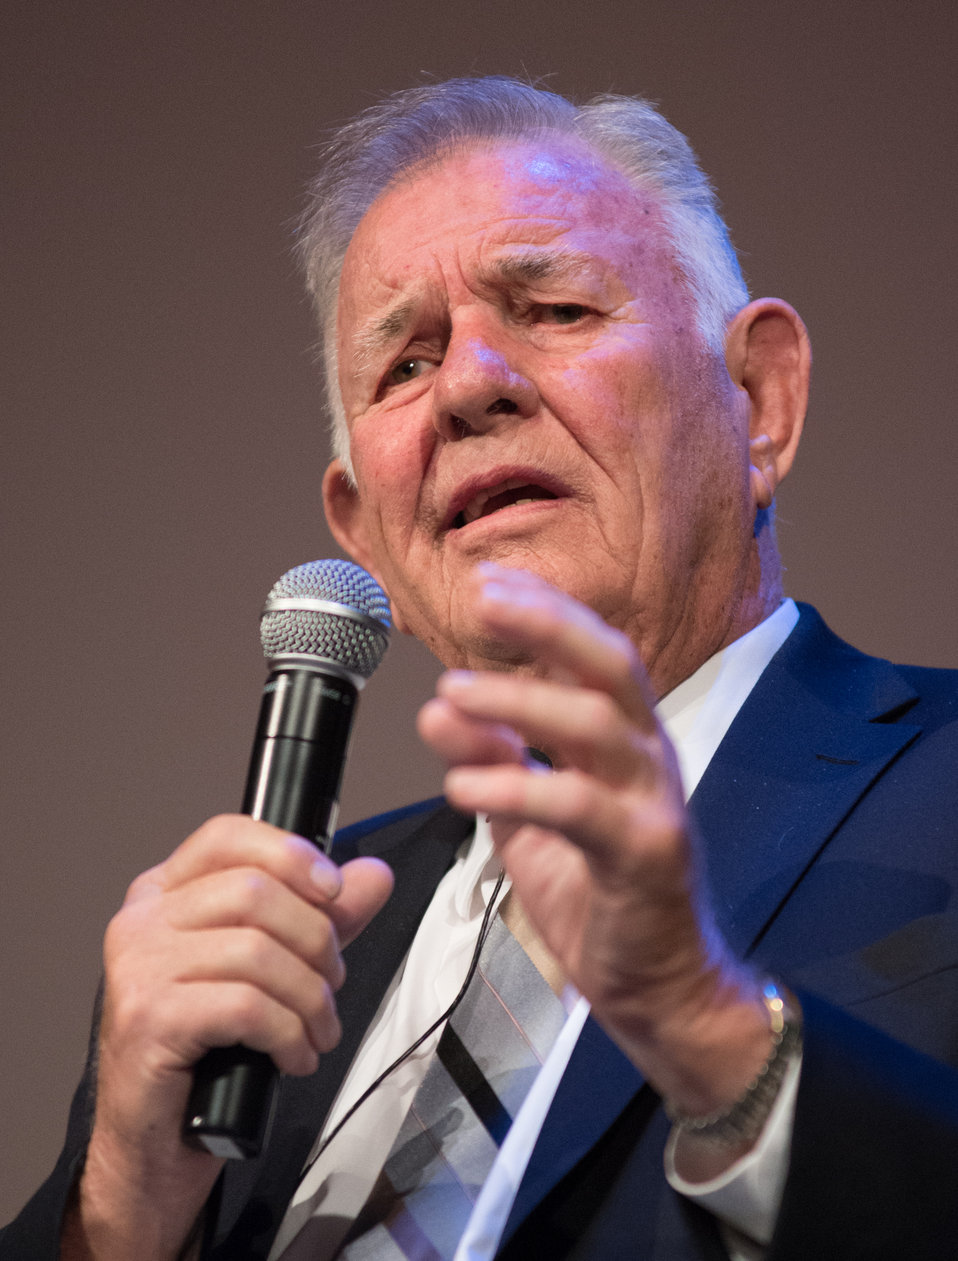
During WW2, Jimmy Gentry, was a soldier in the U.S.Army's 42nd Rainbow Division that helped liberate the Dachau Concentration Camp. Jimmy told of his experiences at the 2013 Federal Inter-Agency Holocaust Remembrance Day event, in the Lincoln Theater, in Washington, DC, on Wednesday, April 17, 2013. Mr. Jimmy Gentry told of his childhood, growing up in Tennessee during the 1930’s in contrast with his experience in the military and fighting in the Battle of the Bulge. This led to end of the war when Allied troops pushed eastward and came upon the death, starvation and illness of the 42,000 prisoners in Dachau concentration camp. Since the 1979 President’s Commission on the Holocaust, an annual proclamation signed by the President of the United States recognizes the importance of remembering the atrocities of the Holocaust that should never be forgotten or be ignored.